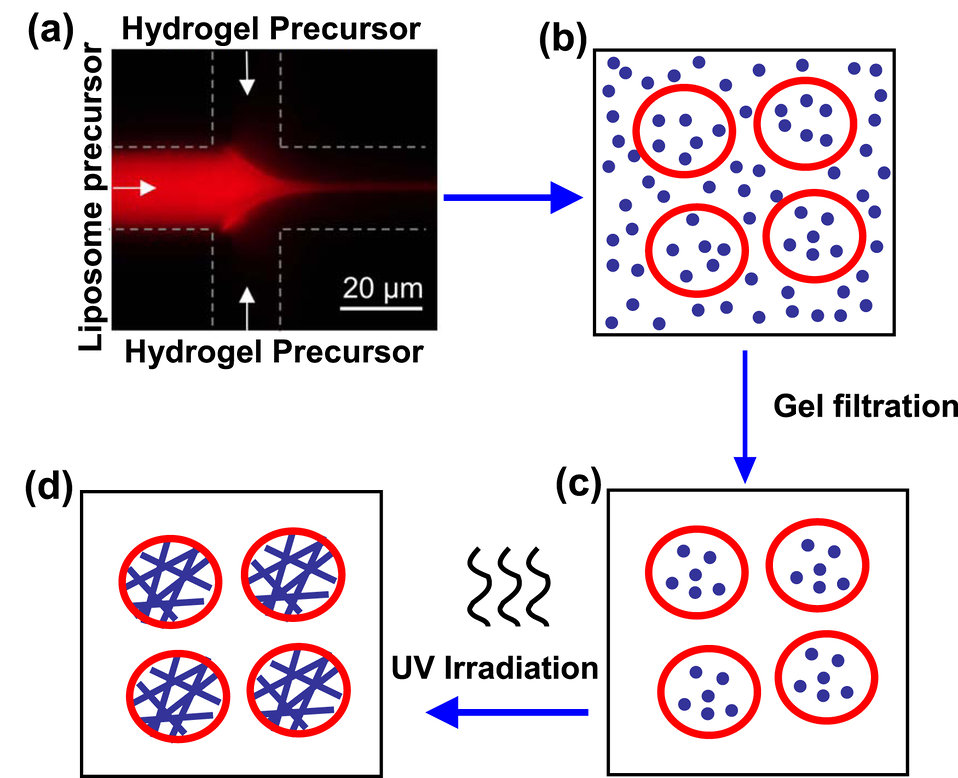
Liposome; Hydrogel

Schematic depicting the creation of liposome-hydrogel hybrids. A solution containing phospholipid ('liposome precursor') mixes with a solution containing hydrogel precursor (a). Blending together at the interface of the two channels, the phospholipid forms liposomes (b) that trap the hydrogel precursor inside. Material outside the vesicles is removed (c) and the liposomes are UV irradiated. This polymerizes the protein chains in the hydrogel and yields a liposome-hydrogel hybrid (d).